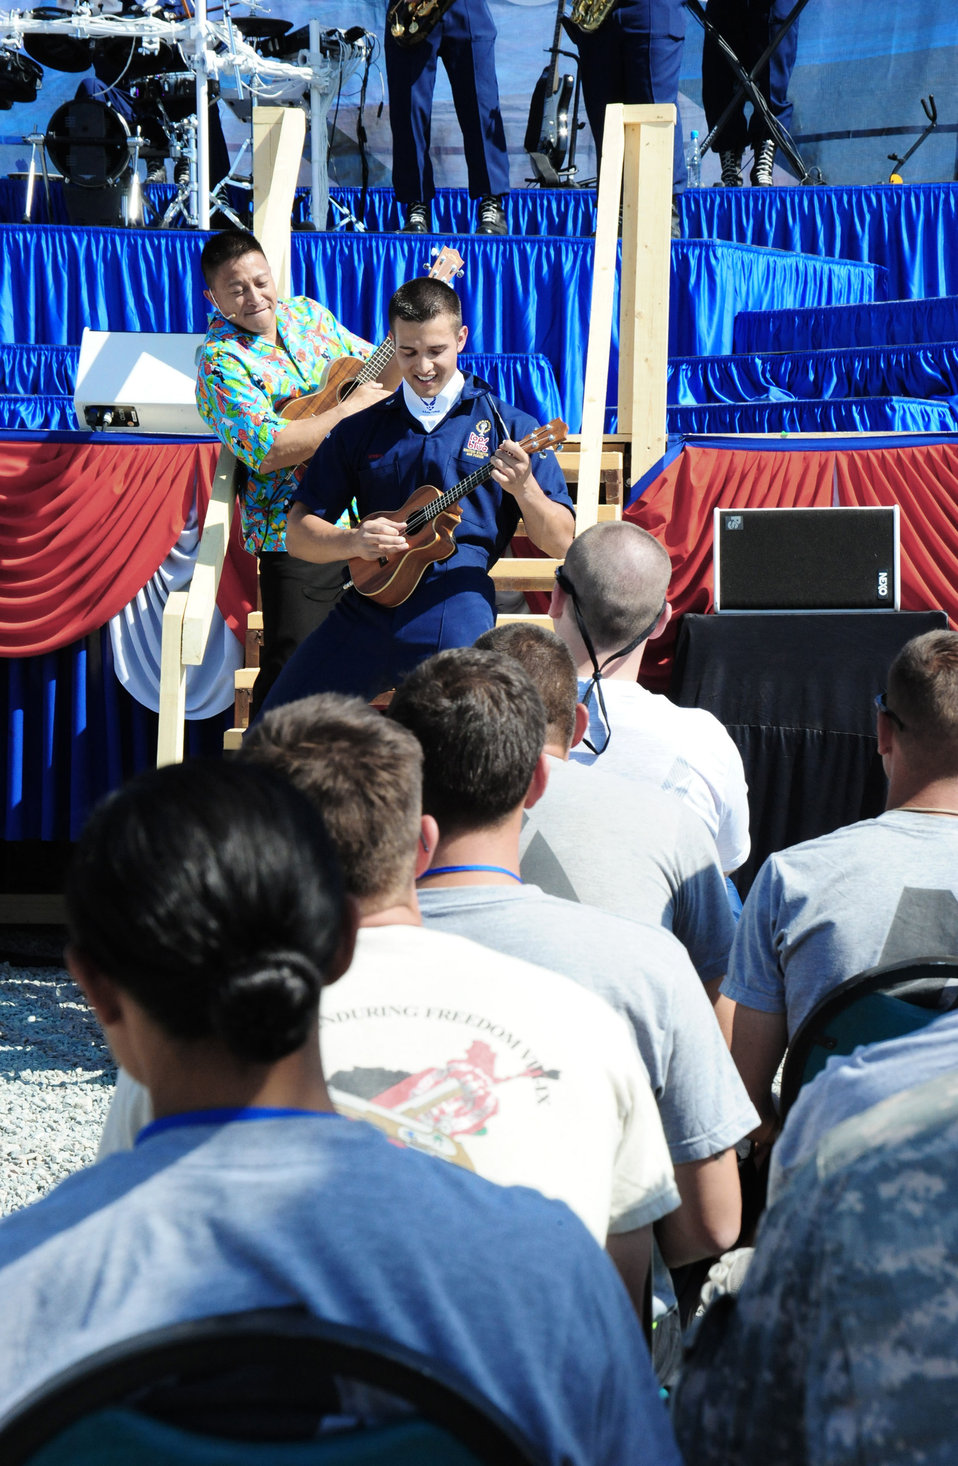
Tops In Blue entertain deployed forces in Kyrgyzstan

Master Sgt. Herbert Ancog and Airman 1st Class Shane Jones take the audience on a musical journey to Hawaii with floral-print shirts and ukuleles July 10 at Manas Air Base, Kyrgyzstan.